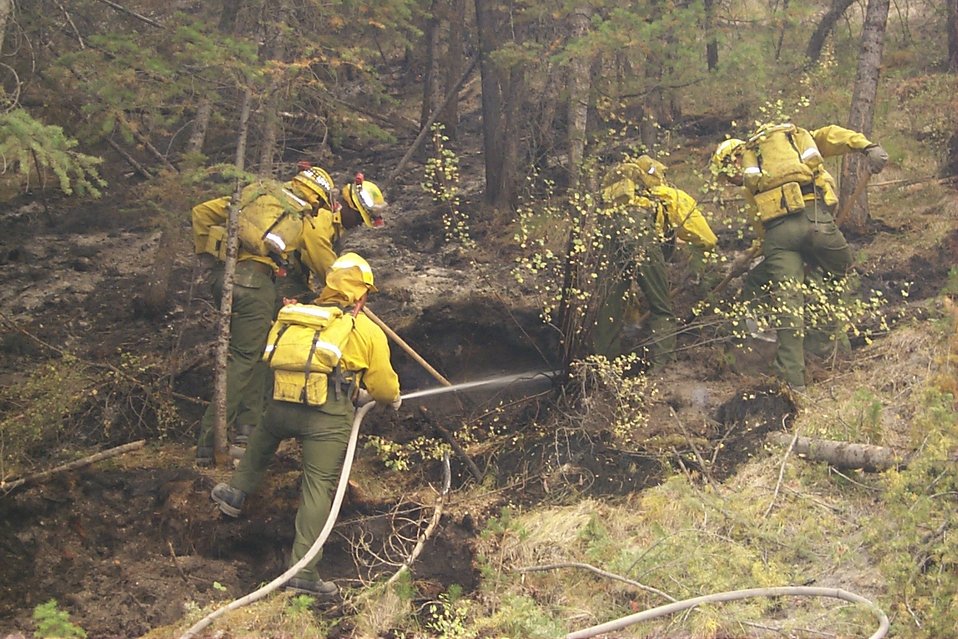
Hot spot line crew Fire Clearwater Fire Salmon Field Office USRD Upper Snake River District